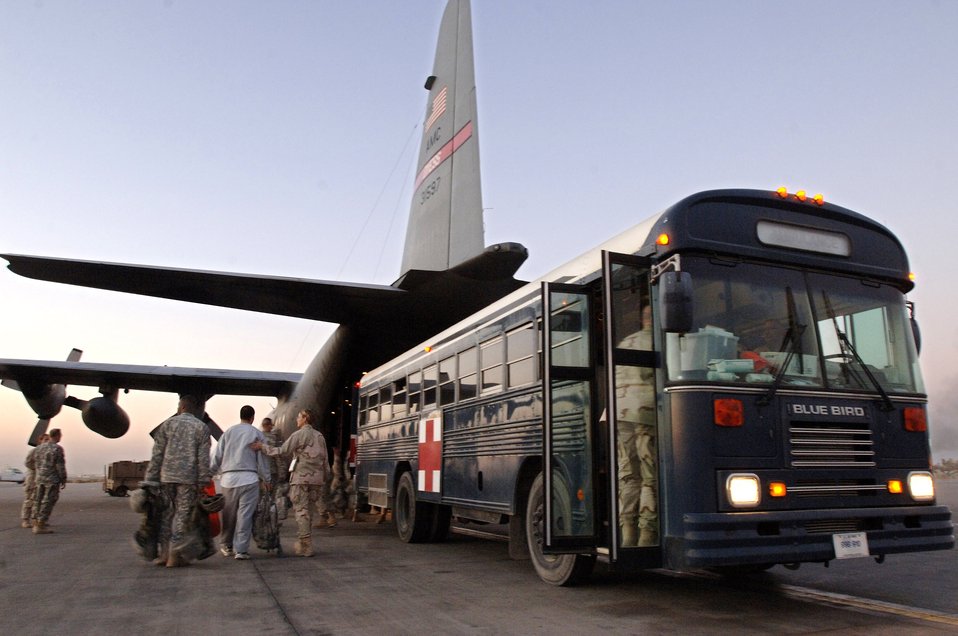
Aeromedical evacuation mission

A C-130 Hercules belonging to the 379th Expeditionary Airlift Squadron and its crew of one flight nurse and two flight medics pick up patients at the 332nd Contingency Aeromedical Staging Facility during a temporary stop at Balad Air Base in Iraq. By days end, 13 patients were picked up and transported to waiting medical facilities throughout the U.S. Central Command area of responsibility.